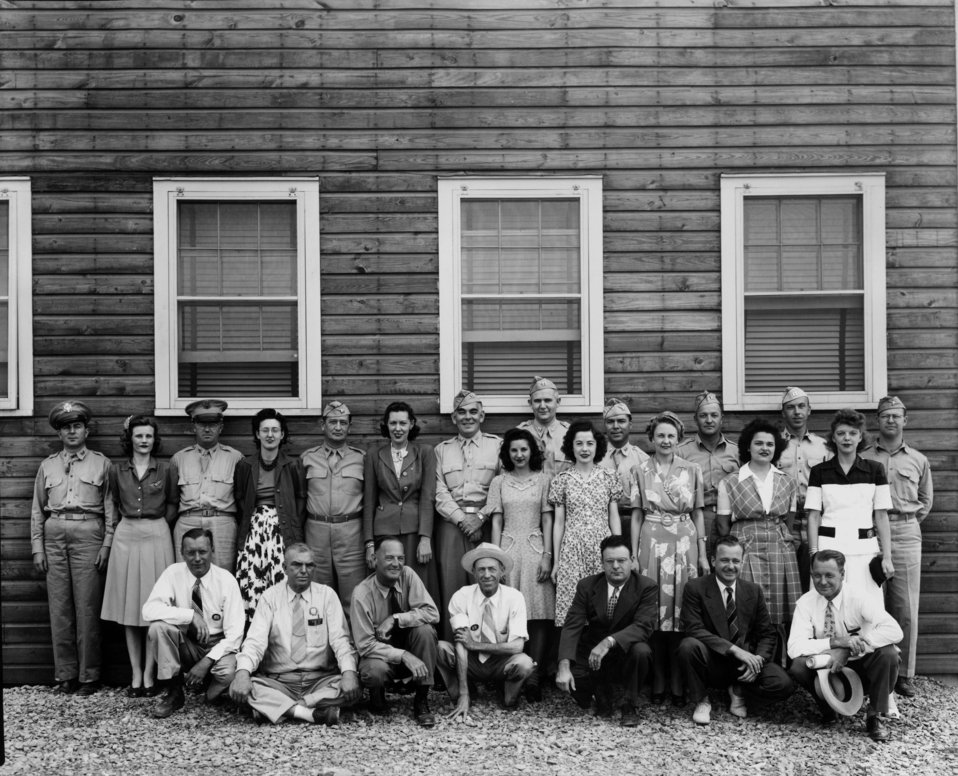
Manhattan Engineering District Office Group

S-348 DOE photo by Ed Westcot 1944 Oak Ridge Tennessee